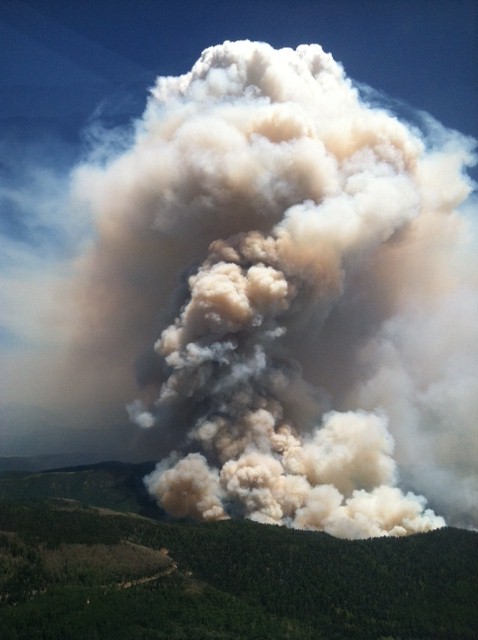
The Little Sand Wildfire burns at the North Fork of Sand Creek in the San Juan National Forest near Pagosa Springs, CO, on Tuesday, June 19, 2012. The wildfire was started by a lightening strike on May 13, 2012. The fire is in rugged and inaccessible terrain, north of the Piedra River, and is currently estimated at 14,224 acres with 30% containment as of Wednesday, June 20, 2012.